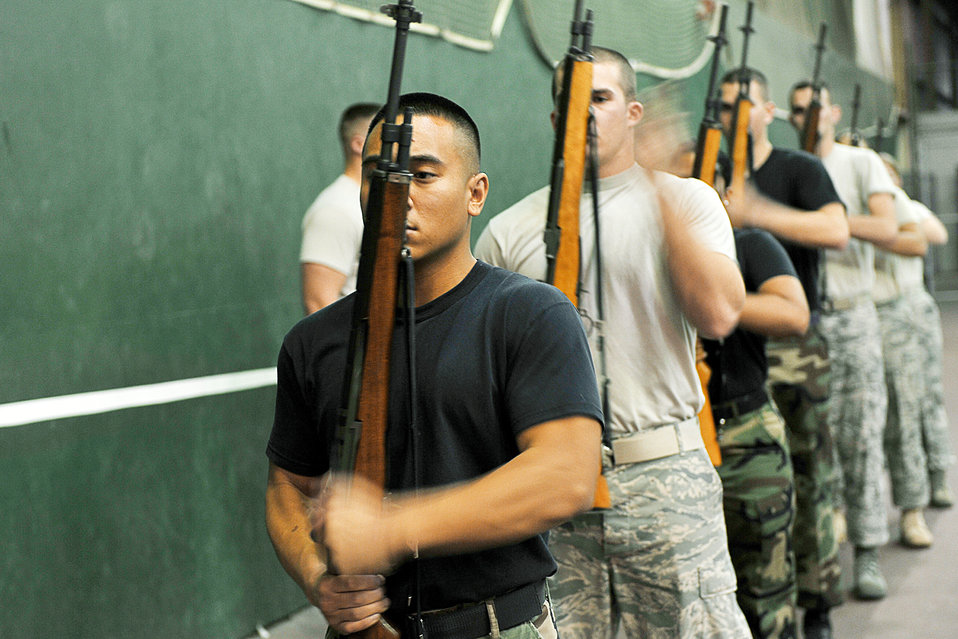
Practice makes perfect

Seven base honor guard members chamber a round during a training session Oct. 21, 2009, at Offutt Air Force Base, Neb. Air Force Honor Guard trainers visited Offutt AFB to evaluate and help sharpen the skills of base honor guard members.